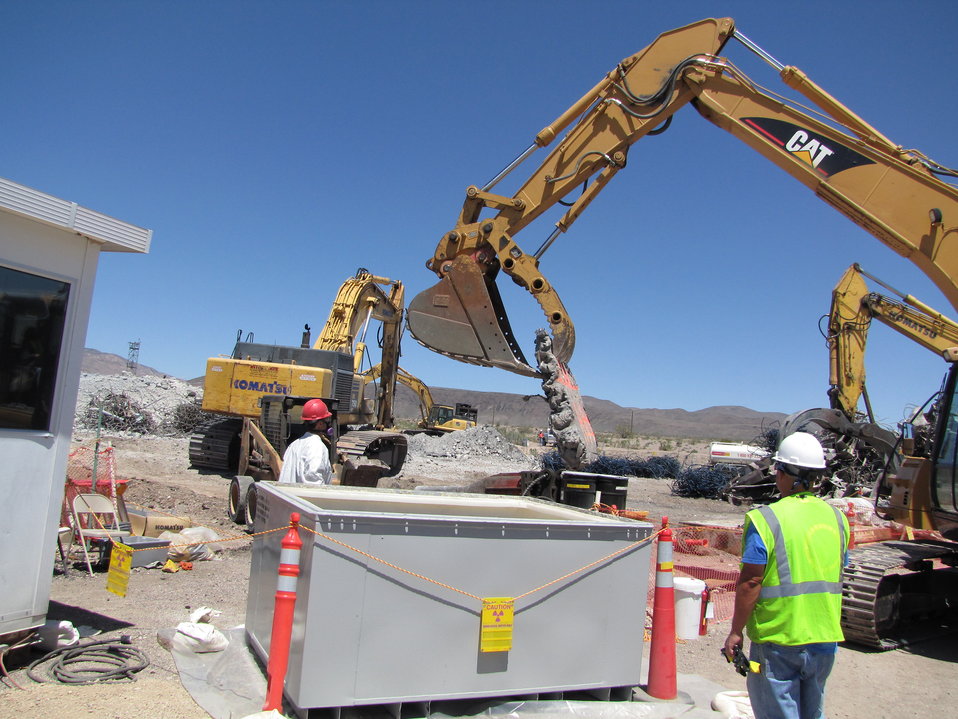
Demolition of the R-MAD facility

Workers remove mixed waste resulting from the demolition of the R-MAD facility at the Nevada Test Site.